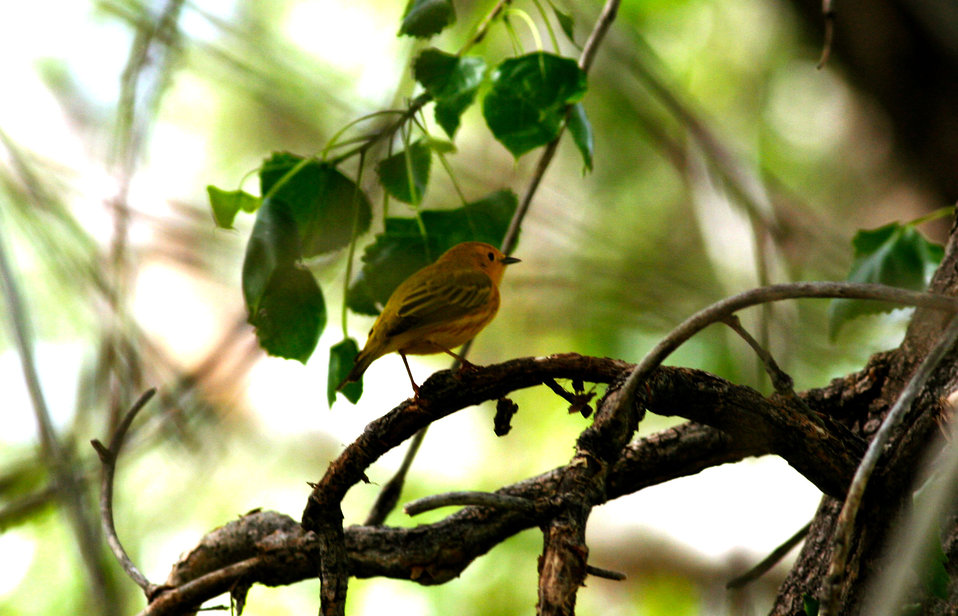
Yellow warbler at RMA

Songbirds like this yellow warbler are filtering through the cottonwood groves at the Rocky Mountain Arsenal National Wildlife Refuge.